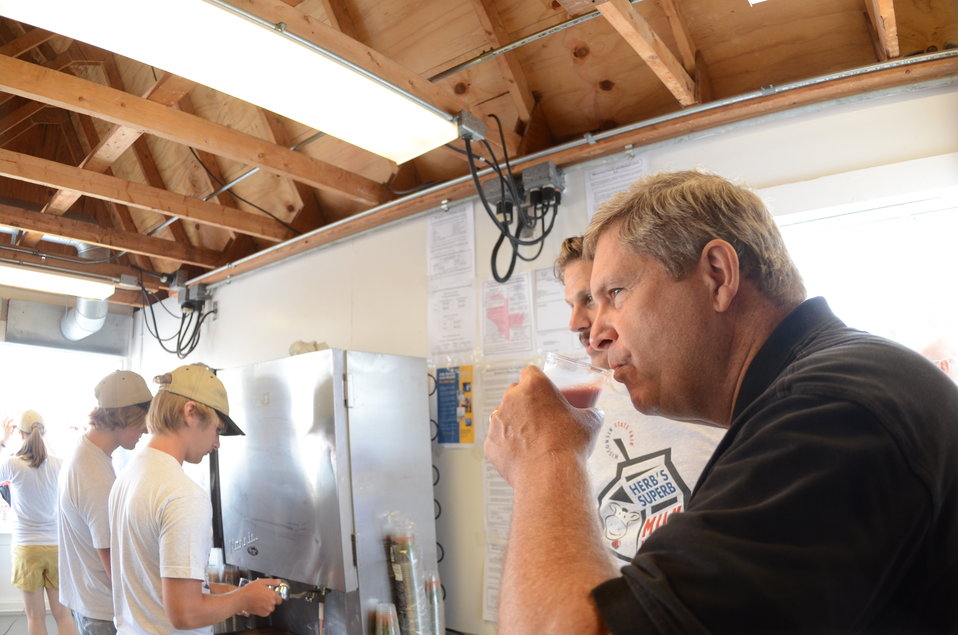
Agriculture Secretary Tom Vilsack at the Wisconsin State Fair in West Allis, WI, on Thursday, August 4, 2011, USDA Photo by Lance Cheung.